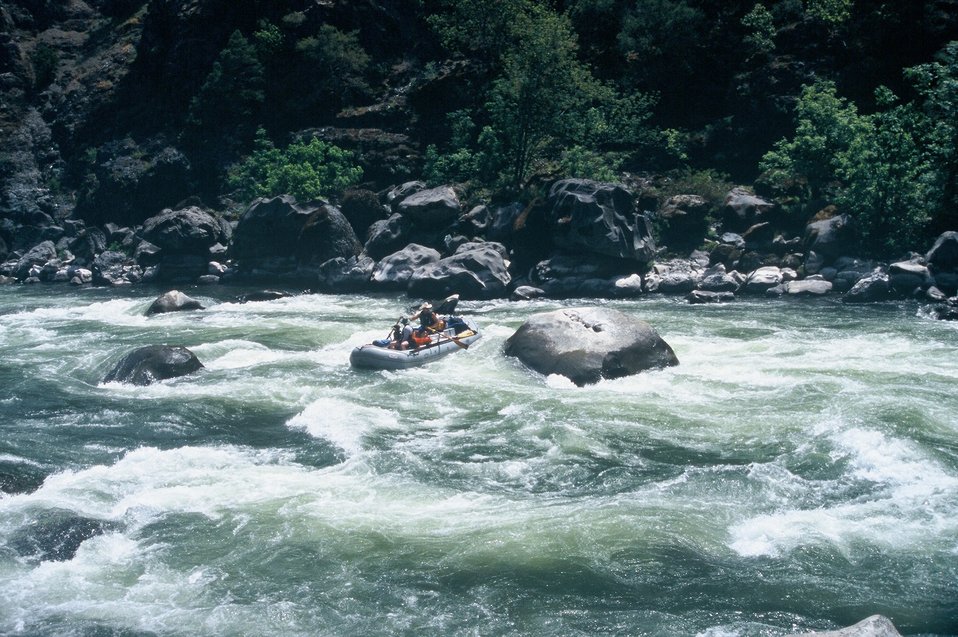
Wild section of the Rogue River from Grave Creek to Foster Bar May 19 to May 22.